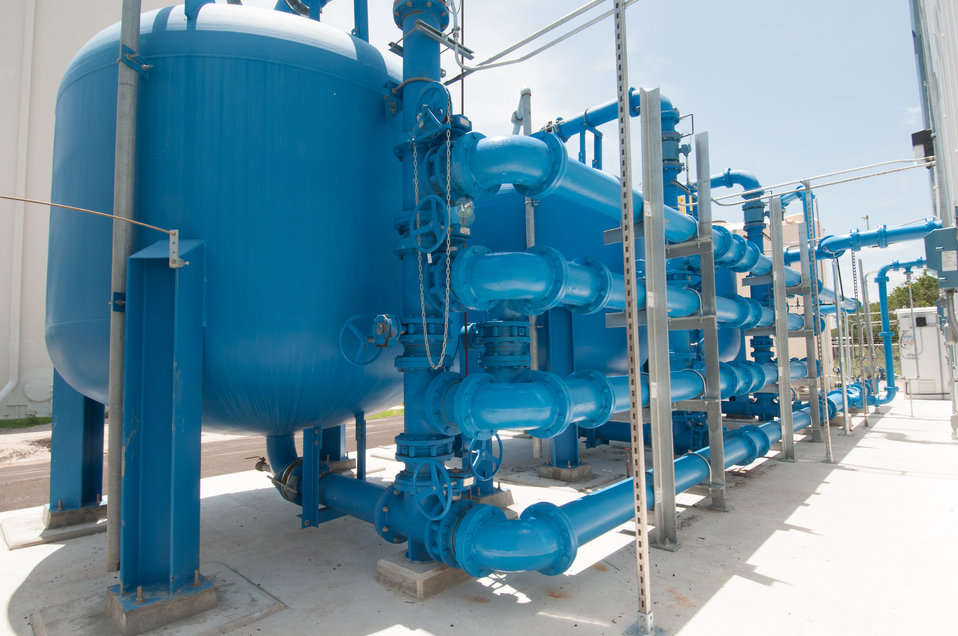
Arsenic removal absorber vessels, at the Freer Water Control and Improvement District (FWCID) Arsenic Removal System Site, on Tuesday, June 18, 2013, in Freer, Texas.

FWCID benefits from the financial assistance of the U.S. Department of Agriculture (USDA) Rural Development (RD) to complete a two-phase approach to meeting the city’s water supply and safety needs, on Tuesday, June 18, 2013. Although, the naturally occurring arsenic levels have remained constant for more than a century, the Environmental Protection Agency (EPA) safe level standards have established lower levels of arsenic to be safe for human consumption. To meet those levels FWCID approached USDA and was awarded a $986,000 loan for Phase I, to install two new water wells, each rated at 167 gallons per minute (creating a total of eight wells); 13,600 feet of well collection lines; and 15,000 linear feet of well control line to remotely control the well pumps and the 1,000,000 gallon holding tank at the well facility, which supplies water to the new Arsenic Removal System (Phase II). Previously, water was manually controlled by personnel who knew when and how long to manually opened and closed water valves or started well pumps to ensure holding tank levels were within operating levels during peek and slack times of the day. Phase II was a combination of a $1,832,000 loan and a $1,258,750 grant, which provided for the customized arsenic removal system, seen in these photos. The system includes a new 3,530 sp. ft. facility, on a .76-acre site, and houses the operations room, computer and power system, laboratory room, and pump systems. The entire operation can be monitored through a desktop computer interface system. The computer-controlled system ensures raw water is fed to the arsenic removal pump system, which works in sequence to maintain a constant pressure, when needed, to pump water through (blue) arsenic removal absorber vessels, and into ground storage tanks that feeds the residential and commercial needs of the city. Samples of water are periodically tested; and so far the arsenic levels have been below 1 part per billion (PPB), well under the 10 PPB limit.